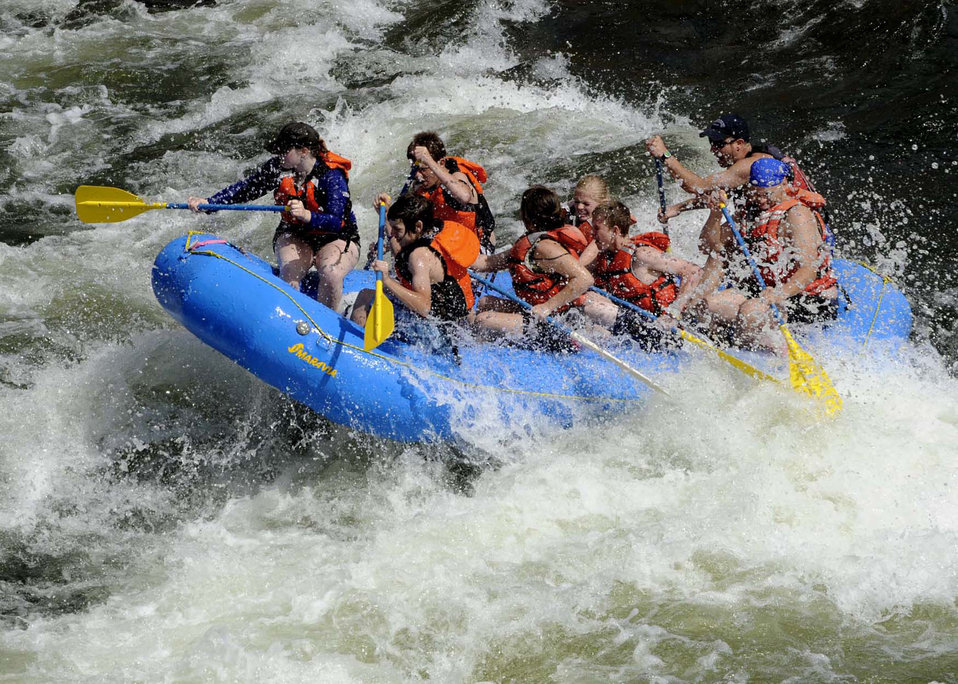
Conquering the rapids

Camp participants raft down the Payette River Aug. 14, 2009, during Operation Purple Camp near Mountain Home Air Force Base, Idaho. More than 155,000 children have at least one parent deployed, and during the week of Aug. 9 through 15, 46 of those boys and girls learned coping methods during the camp held in nearby Donnelly.